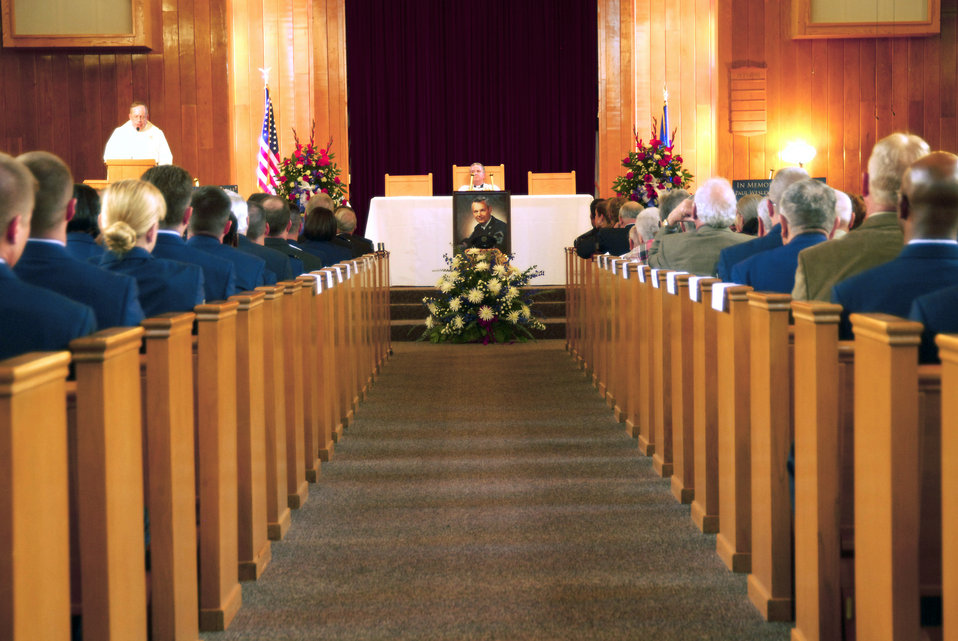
Airey memorial service celebrates life of AF hero

The centerpiece of the memorial service for the first Chief Master Sgt. of the Air Force, Paul W. Airey, rests in the center of the base chapel sanctuary at Tyndall Air Force Base, Fla., March 16. In front of the painted portrait of the Chief rested a solitary service cap facing forward to the audience. More than 500 people were in attendance for the memorial service.